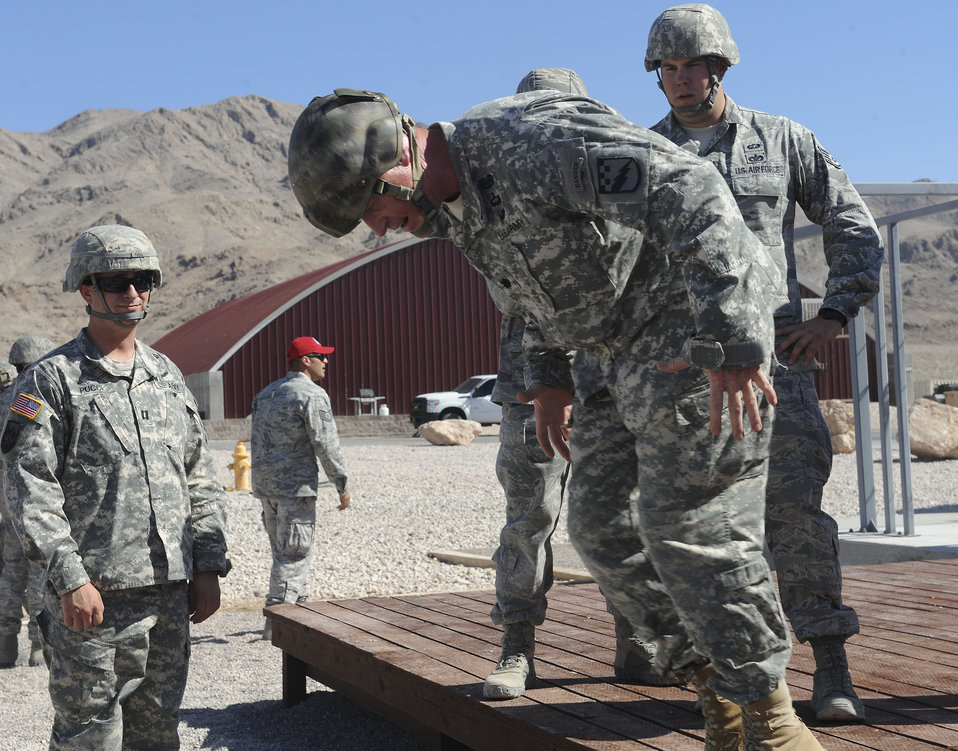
Airmen, Soldiers complete MAFEX

U.S. Army Lt. Col. Eric Crider, the 1-38th Cavalry Squadron commander, demonstrates the incorrect way to exit an aircraft during Mobility Forces Exercise 12A at Nellis Air Force Base, Nev., May 22, 2012. Airmen from the 820th RED HORSE Squadron and Soldiers from Ft. Bragg, N.C., jumped from C-130 Hercules aircraft at the Nevada Test and Training Range in Tonopah, Nev., to simulate setting up a bare base.